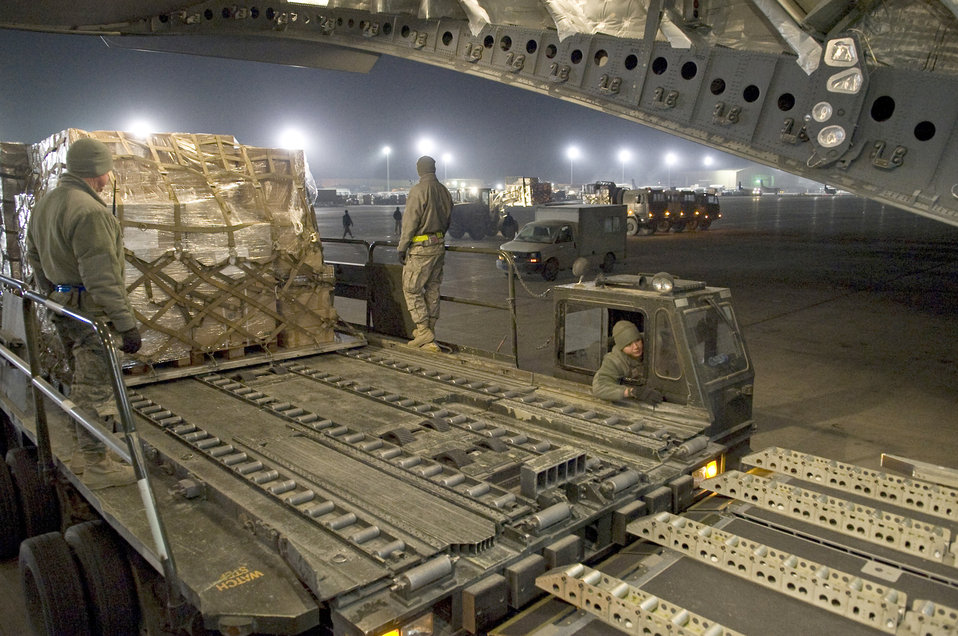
Three-day mission

Supplies from Poland are unloaded from a C-17 Globemaster III from the Heavy Airlift Squadron at Papa, Hungary, after arriving Dec. 8, 2010, at Bagram, Afghanistan. The three-day mission will span about 7,000 miles covering the countries of Hungary, Poland, Afghanistan and Lithuania with more than 75,000 tons of cargo.